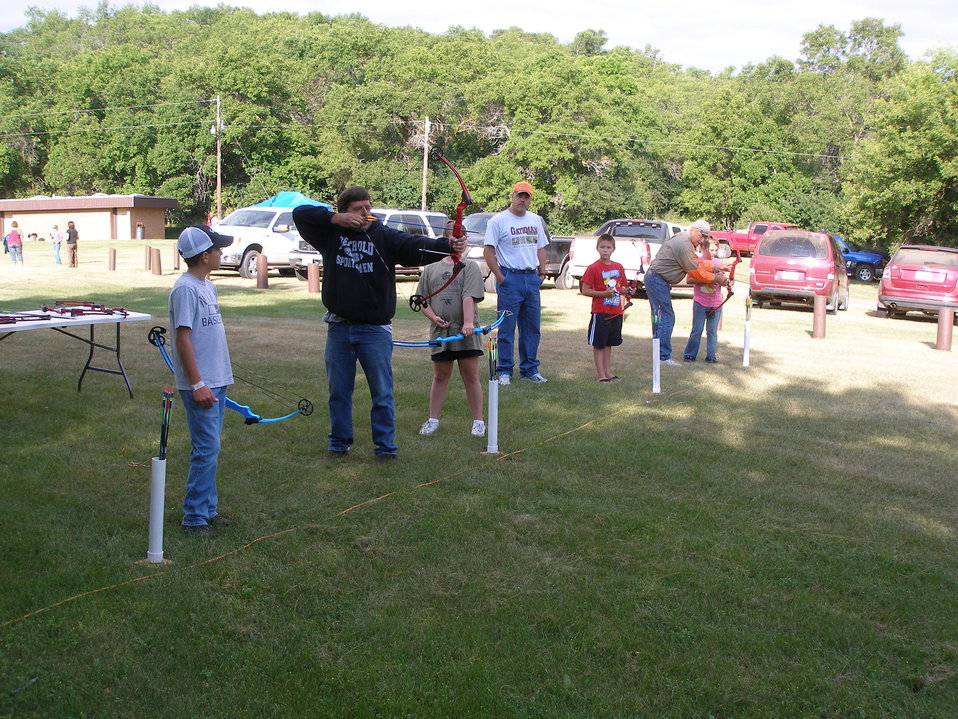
2011 Greenwing Day - Archery Session

Des Lacs National Wildlife Refuge, Tasker's Coulee

Thankfully, the Refuge has lots of support in the community when it comes to youth events. The Berthold Sportsman Club partnered with Ducks Unlimited and Des Lacs Refuge by holding an Archery session for participants.